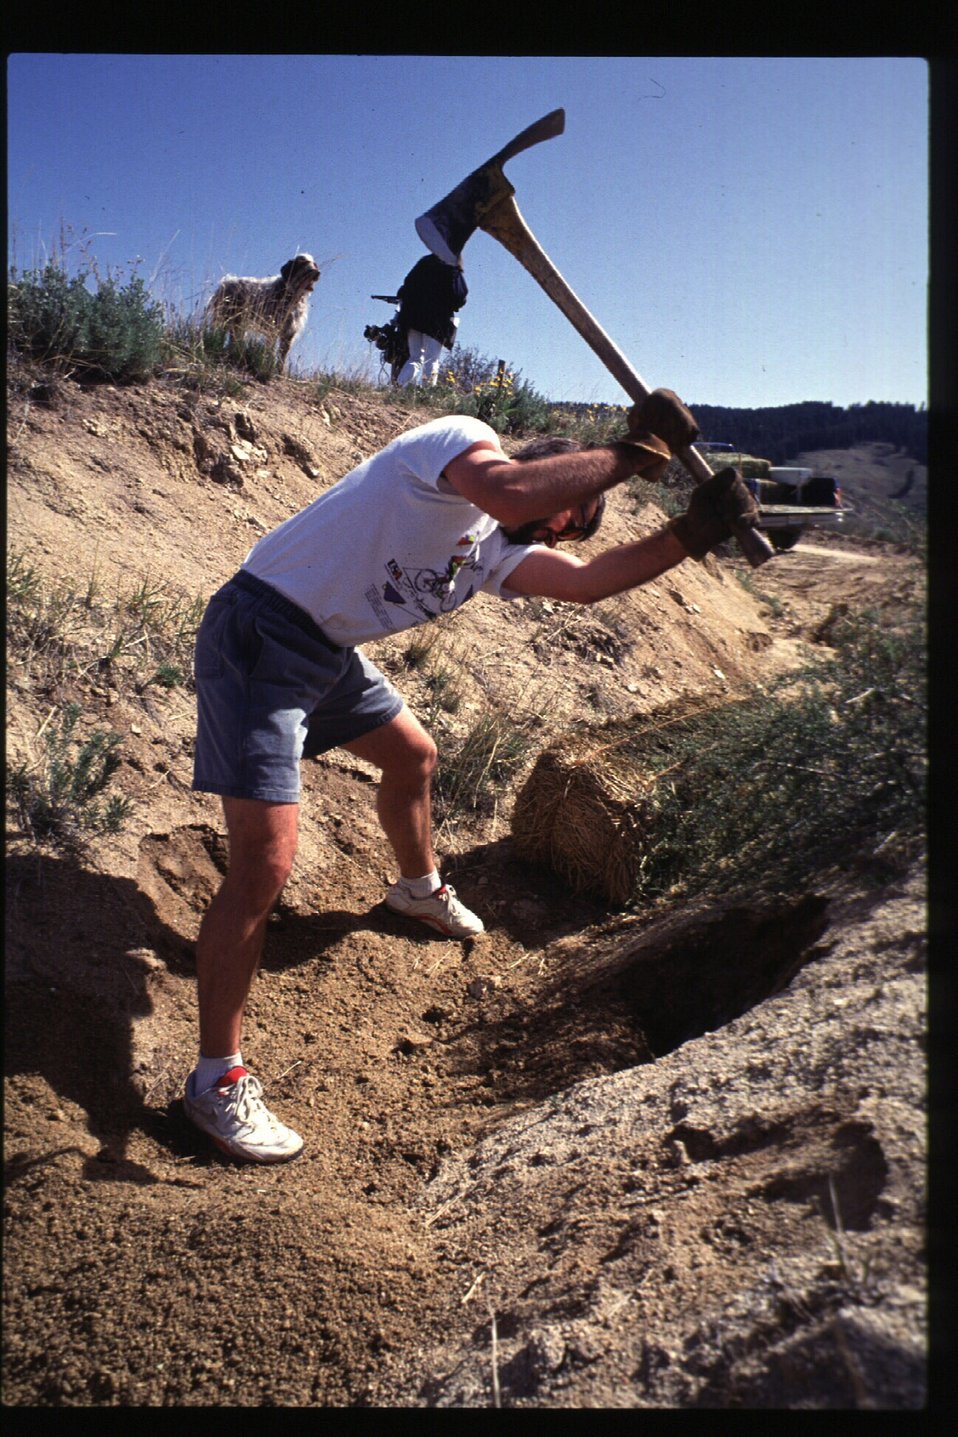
Rangeland and environmental education Boise Front Tending our Foothills Straw bale check dams Four Rivers Field Office LSRD Lower Snake River District